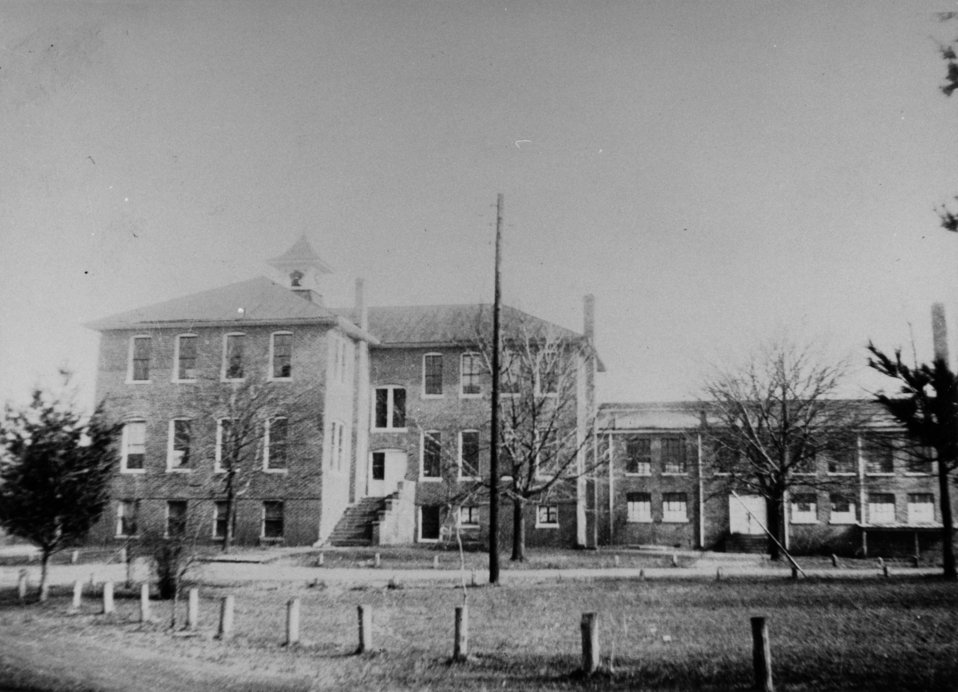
Early settlers at Oak Ridge